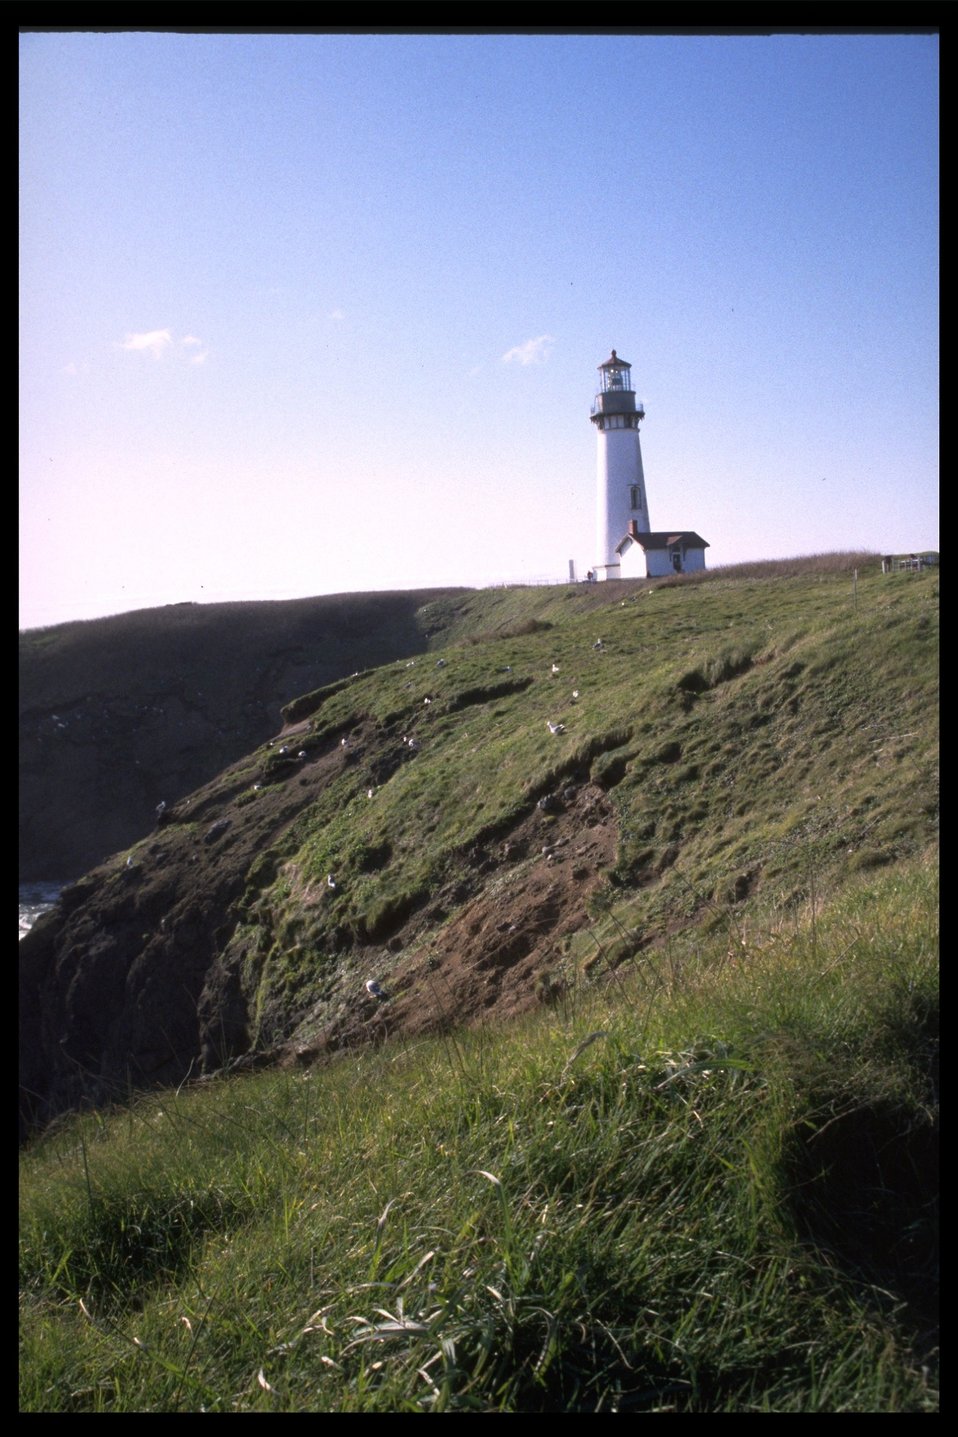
Yaquina Head Lighthouse.